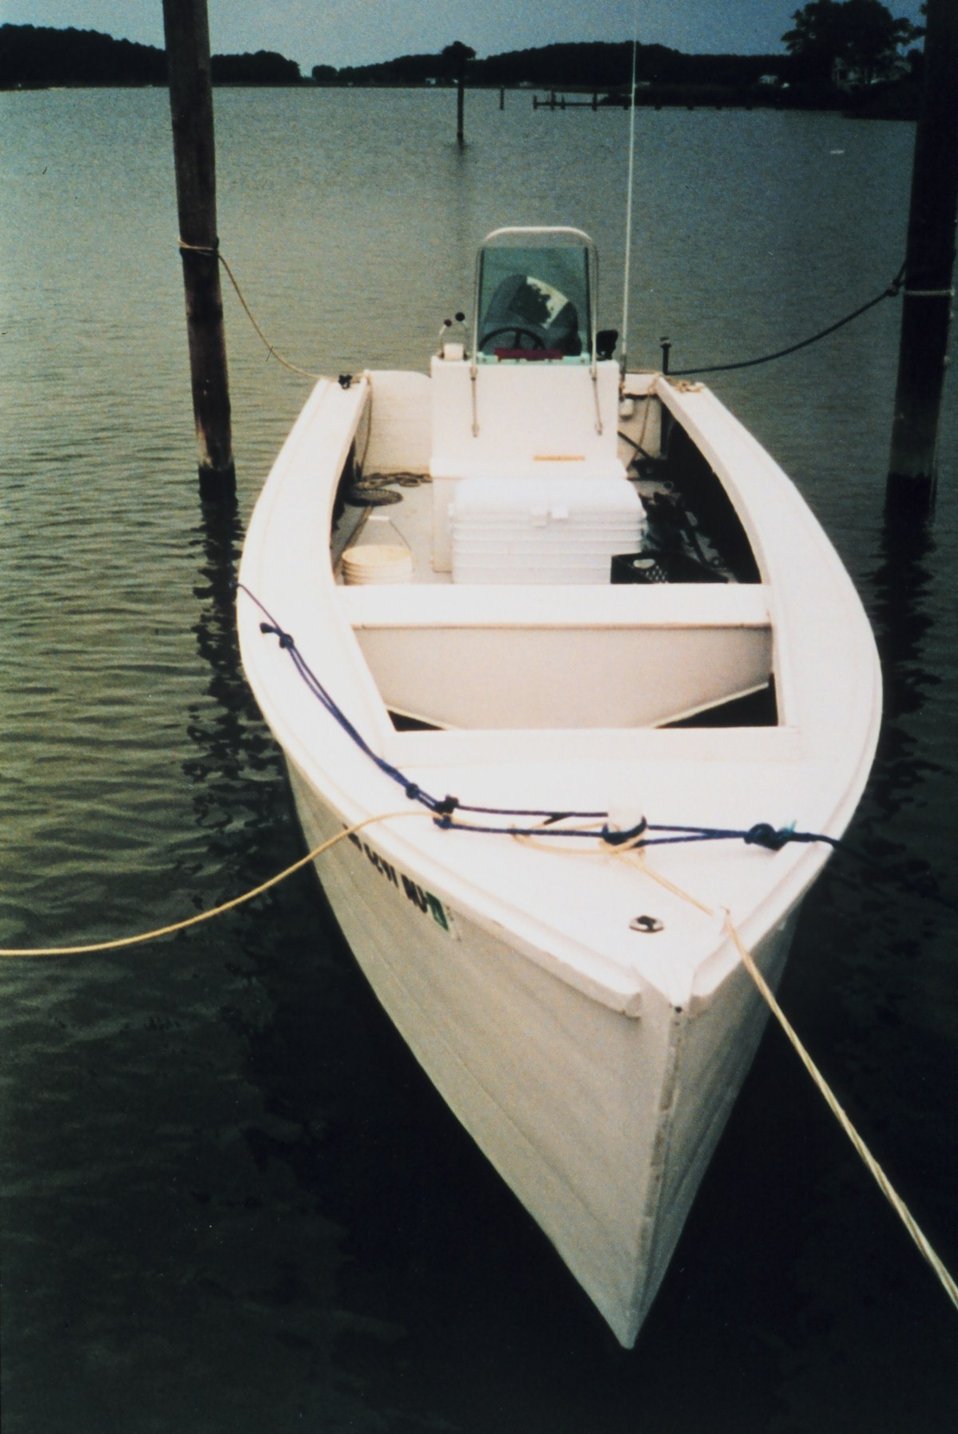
A typical 'home-made' skiff used by St. Mary's County watermen.